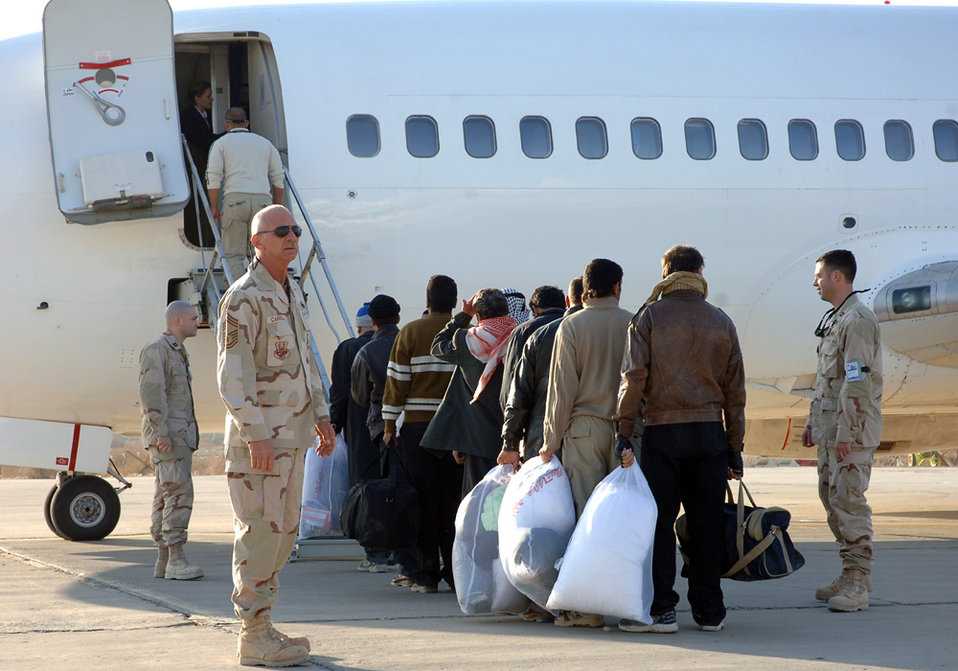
Iraqi poll workers

BAGHDAD, Iraq (AFPN) -- Chief Master Sgt. Ronald Carroll helps Iraqi election workers board a contract flight to polling sites. He is with the 447th Expeditionary Logistics Readiness Squadron.